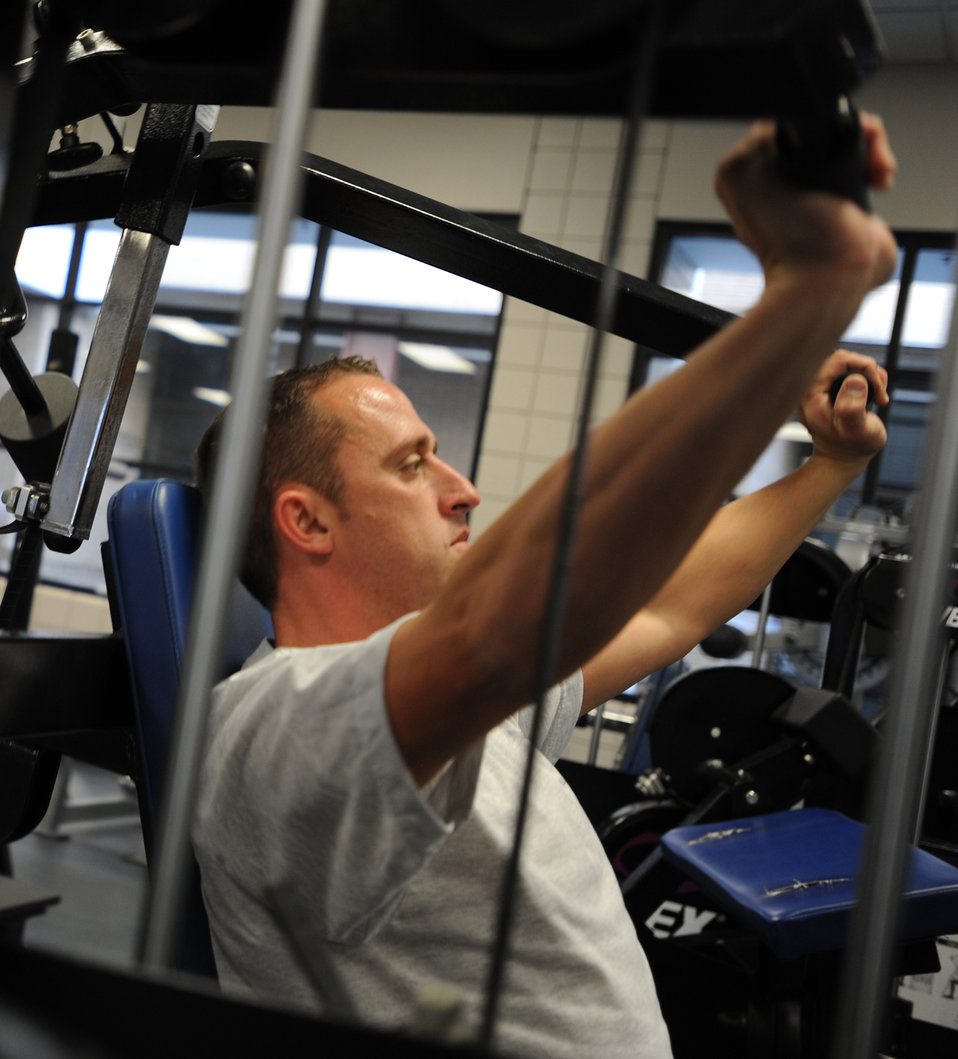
Physical fitness

Staff Sgt. John Brennan lifts weights Nov. 9, 2010, at the base fitness center at McConnell Air Force Base, Kan. Sergeant Brennan is the 22nd Aircraft Maintenance Squadron crew chief. He scored a 69.4 on his initial physical training test, and after working out for 90 days, he retested and scored 93.7.